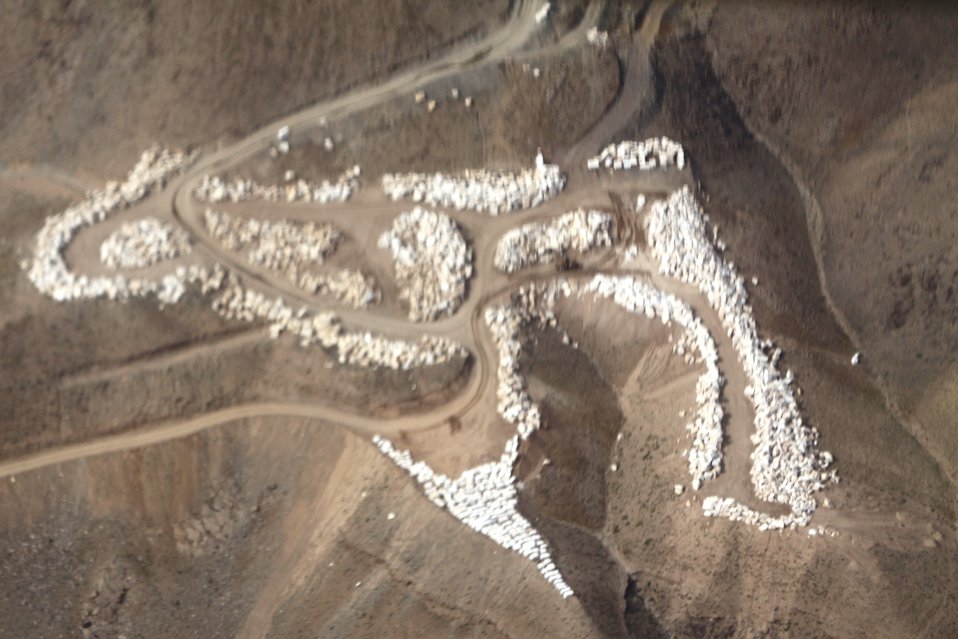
100525 Hirat Marble Conference 024